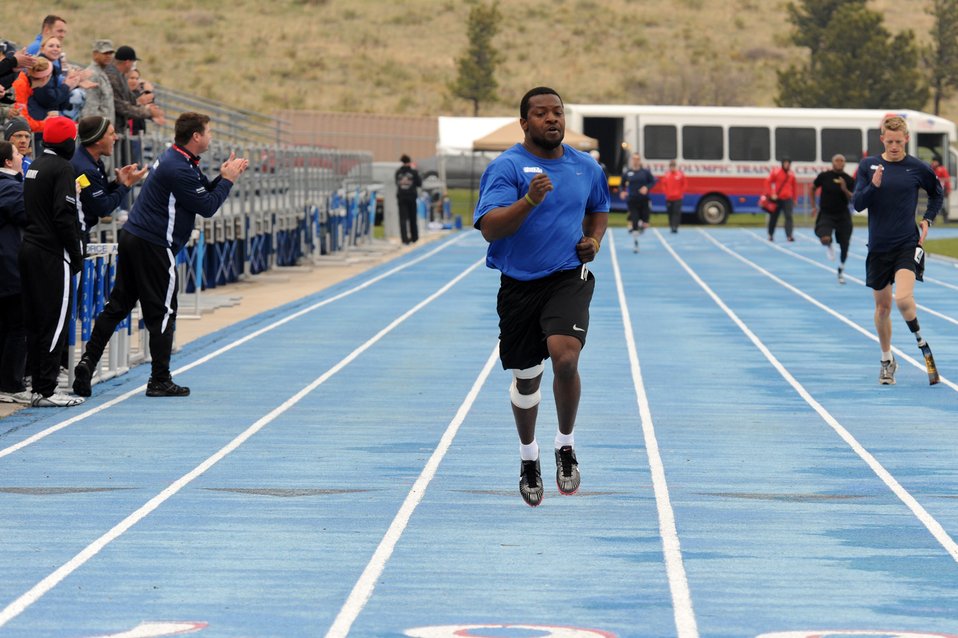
Warrior Games AF track and field

Air Force team member Matt Sanders competes in a track event during the Warrior Games at the U.S. Air Force Academy track in Colorado Springs, Colo., May 14, 2010. Sanders led the Air Force track and field team with three medals, earning a gold in the 400-meter and the 200-meter races and a silver in the 100-meter sprint.